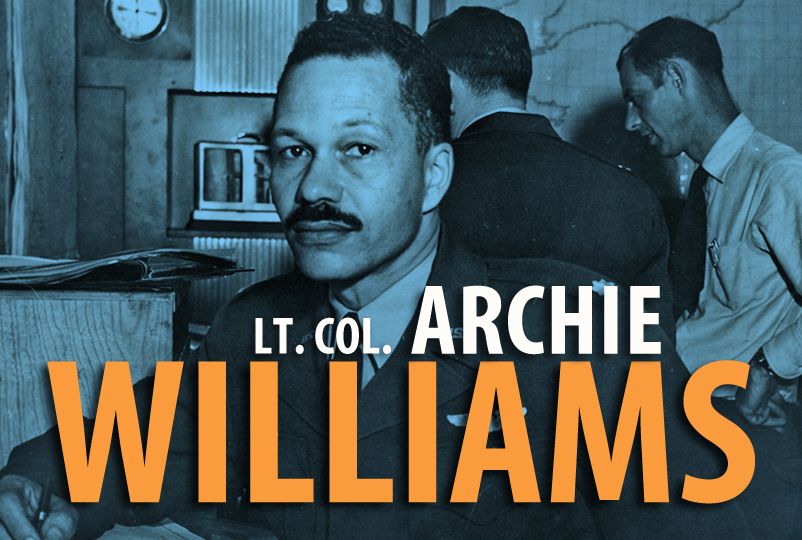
Lt. Col. Archie Williams